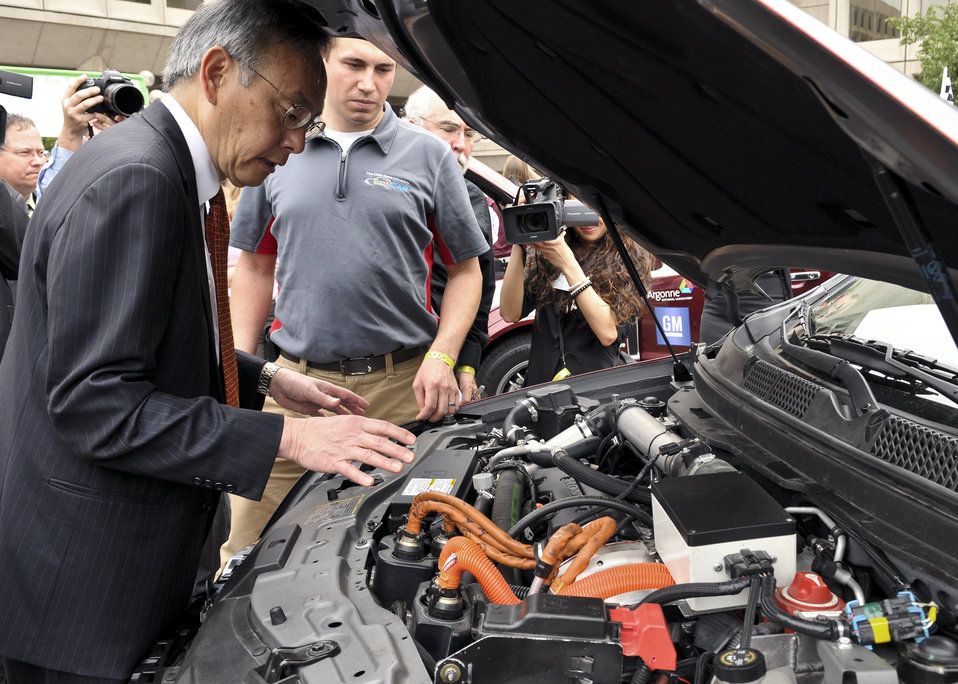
EcoCAR Challenge Finish Line 6 of 8

US Department of Energy Secretary Steven Chu talks shop with members of the Ohio State EcoCAR team.